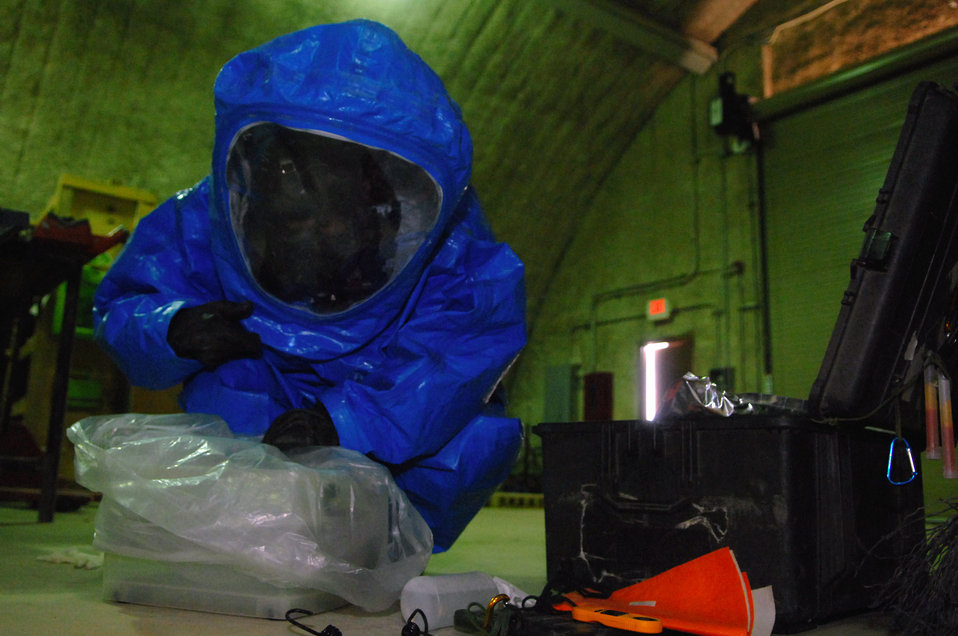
Battle drills condition emergency responders

Senior Airman Krista McVicar bags a contamination collection box during a battle drill March 26 at Balad Air Base, Iraq. Airman McVicar is a 332nd Expeditionary Civil Engineer Squadron emergency manager and is deployed from Davis-Monthan Air Force Base, Ariz.